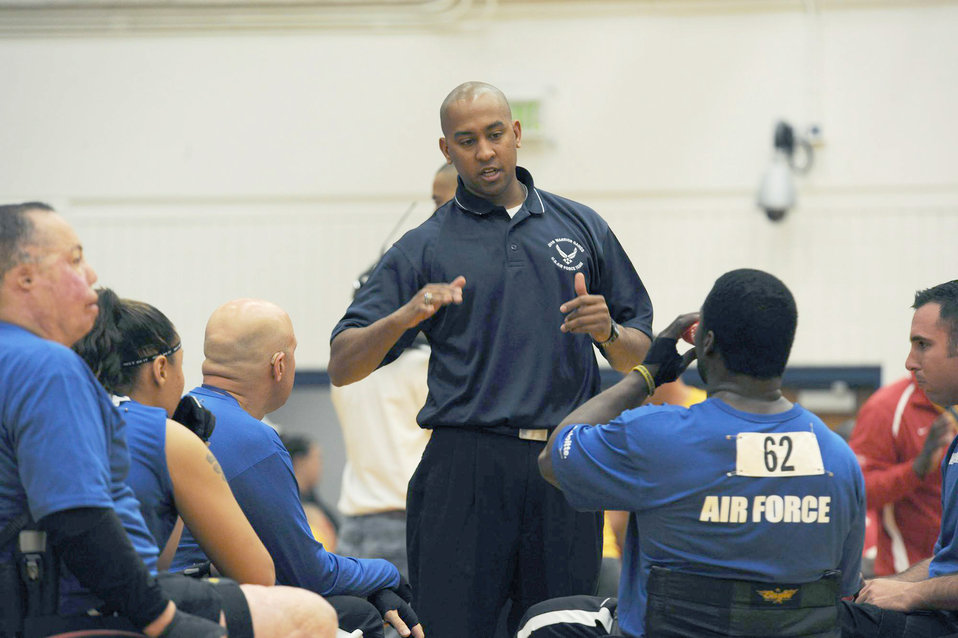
Warrior Games basketball competition

First Lt. Dan Taylor talks strategy with his team during the first game of the Warrior Games wheelchair basketball competition May 11, 2010, at the U.S. Olympic Training Center in Colorado Springs, Colo. Lieutenant Taylor is the Air Force wheelchair basketball coach.